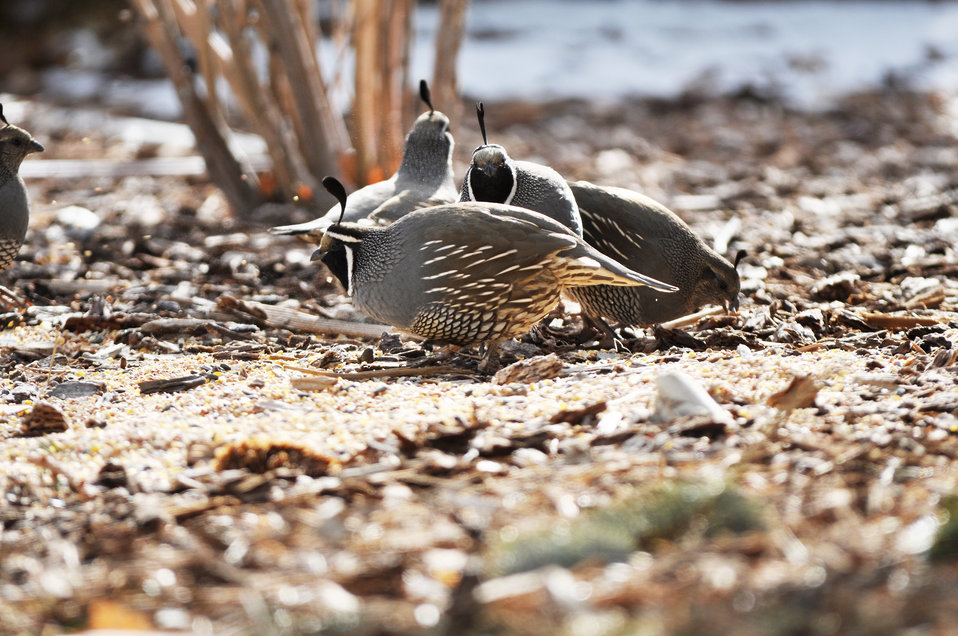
California quail photos taken in Gardnerville, NV